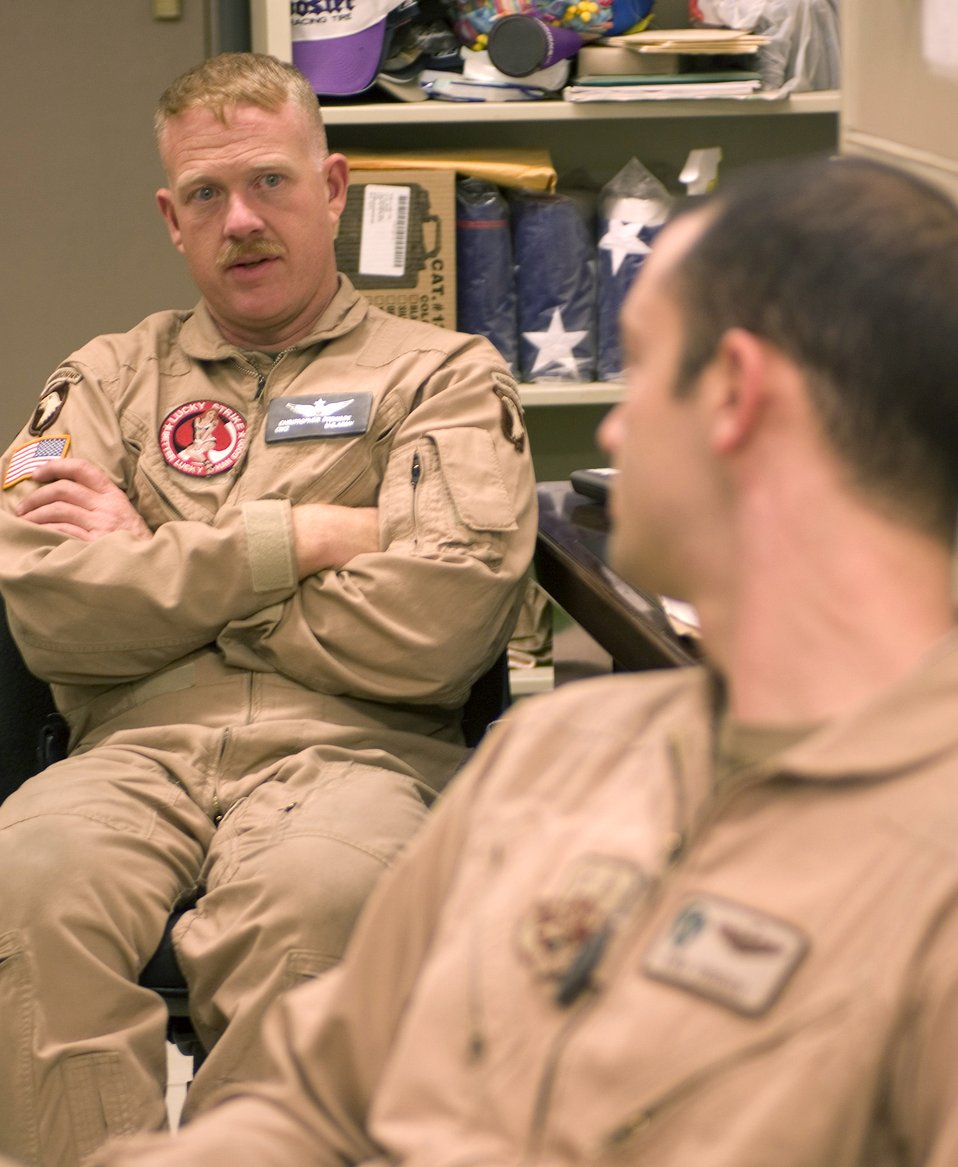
HH-60Gs integrate with Army AH-64s for war missions

Army Chief Warrant Officer Christopher Stewart debriefs a joint training mission with Capt. Ryan Voneida Sept. 26 at Bagram Airfield, Afghanistan. Mr. Stewart is an AH-64 Apache pilot, and Captain Voneida is an HH-60G Pave Hawk pilot assigned to the 33rd Expeditionary Rescue Squadron.